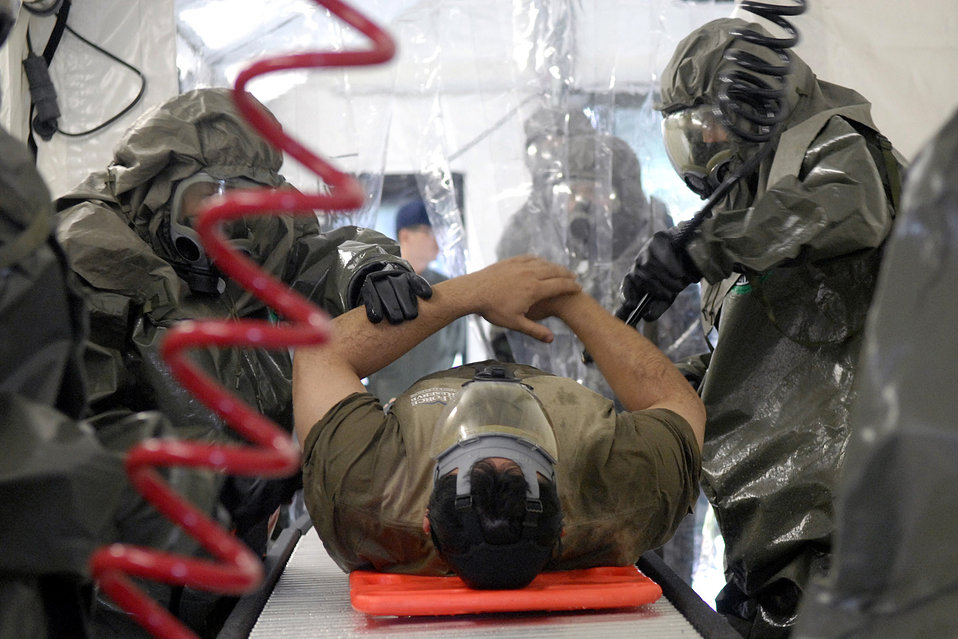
Officials show off expeditionary medical system

During a Korean host visit, Lt. Roy Tomkus disinfects a